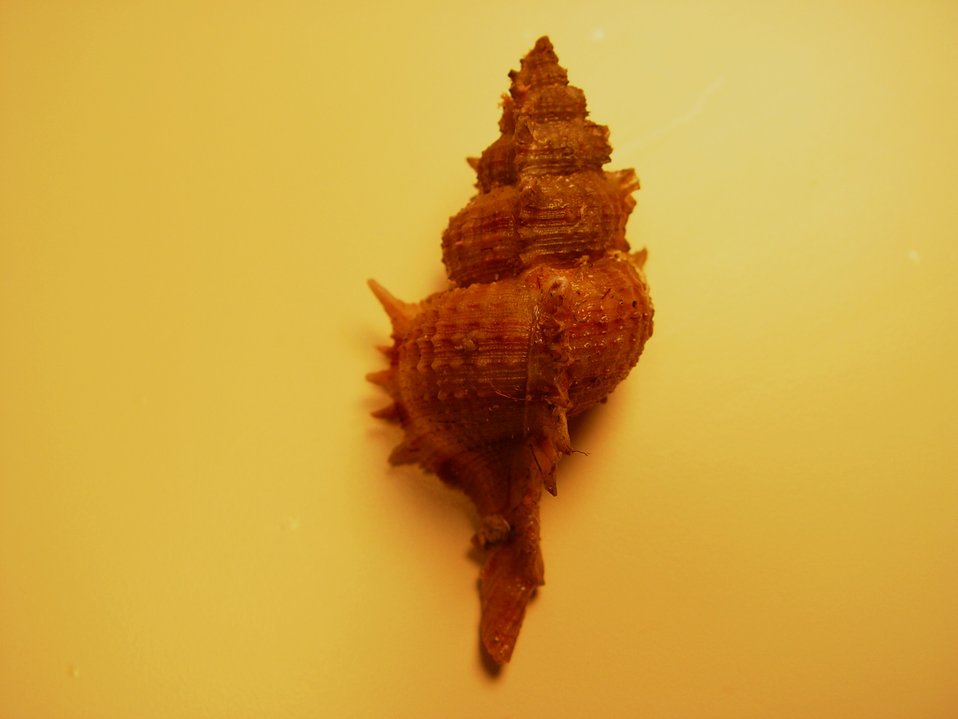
Beau's murex ( Chicoreus beauii , synonym Siratus beauii )